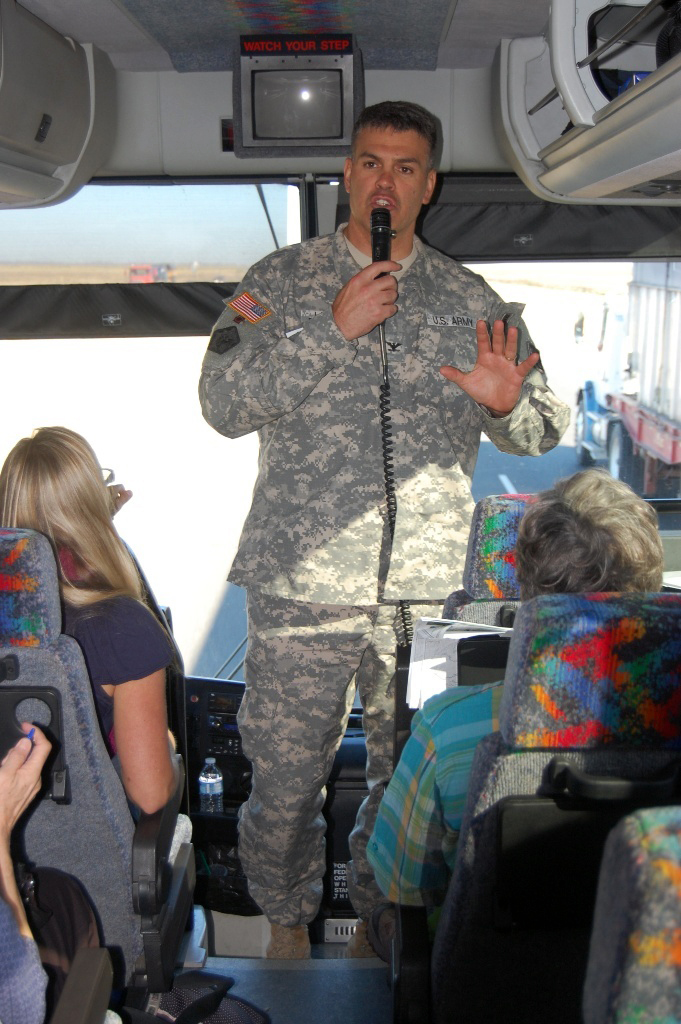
Northern California water education tour

U.S. Army Corps of Engineers Sacramento District commander Col. Bill Leady speaks to participants at the Water Education Foundation’s Northern California Tour Oct. 17, 2012. Leady and other speakers discussed innovative programs for flood management, groundwater management and salmon restoration while visiting Oroville and Shasta dams, Red Bluff Diversion Dam, the Feather River Fish Hatchery, Clear Creek Restoration Project and Glenn-Colusa Irrigation District’s fish screen and Delevan Wildlife Refuge.